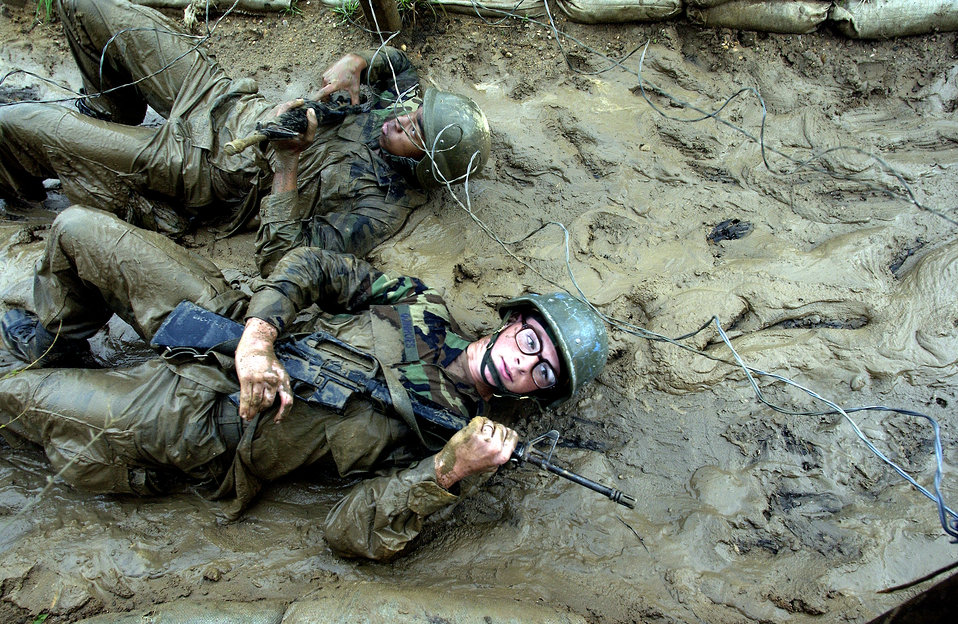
Through the muck and mud

LACKLAND AIR FORCE BASE, Texas -- Basic trainee Jeffery Quinhoes low crawls a barbed wired obstacle course as he navigates the combat tactics course at Warrior Week's training ground here. The training during Warrior Week prepares trainees for the possibility of world wide deployment almost immediately upon arrival at their first duty station. The trainees are in their fifth week of training and are one week away from graduation.